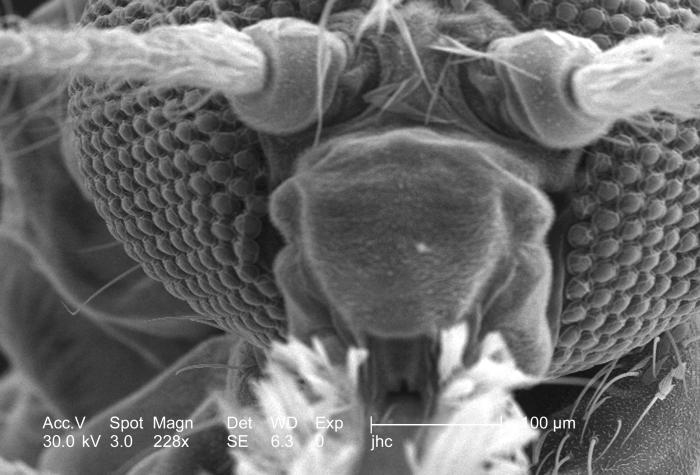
Magnified 228x, double that of PHIL 8780, this scanning electron micrograph (SEM) revealed some of the morphologic features displayed on the exoskeletal surface of an Anopheles gambiae mosquito's anterior head region. Included in this field of view were the two bilaterally located antennae, the proboscis, two maxillary palps, and the clypeus, to which the aforementioned structures are attached. Also note the two bilateral multifaceted compound eyes.